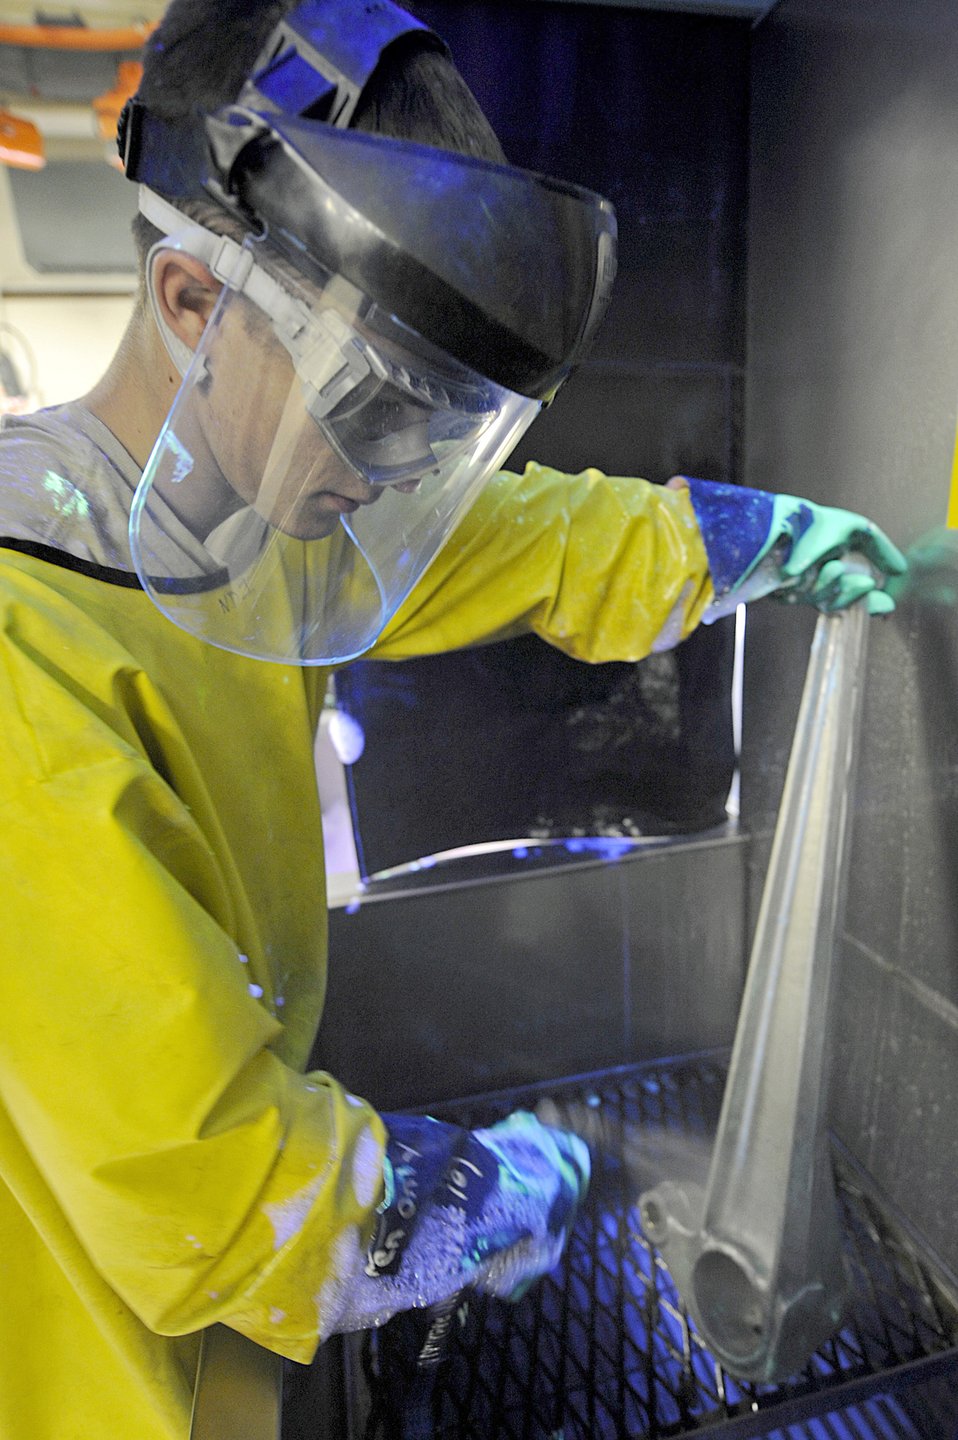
Ellsworth ultraviolet light inspection

Airman 1st Class Evan Bryant sprays off a lower link after it was covered in a solution that makes cracks appear brighter May 20, 2010, at Ellsworth Air Force Base, S.D. Airman Bryant is a non-destructive inspection technician with the 28th Maintenance Squadron.